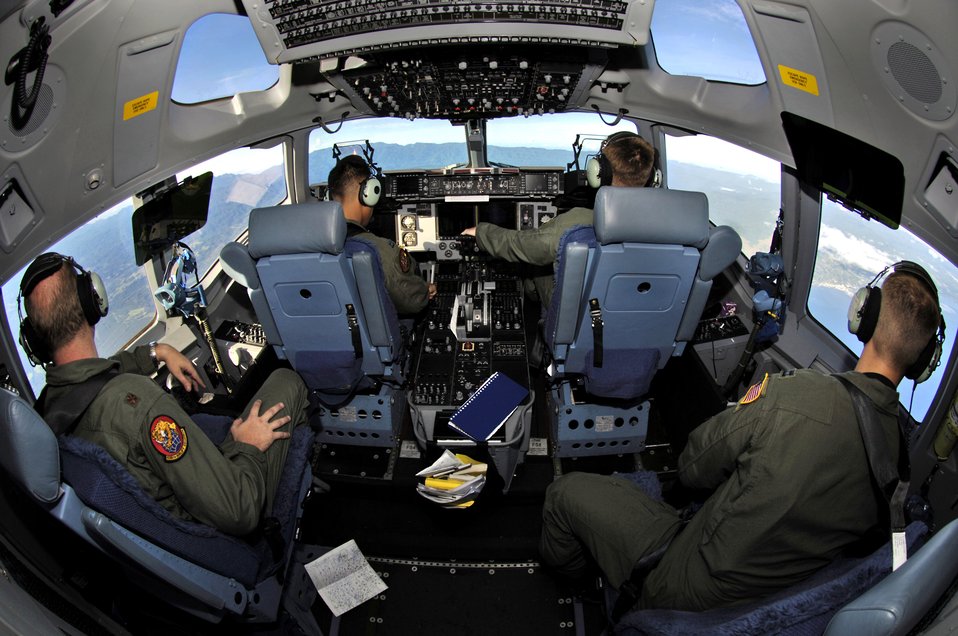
Loadmasters help reposition Australian Defense Forces

C-17 Globemaster III crew members view Guadalcanal during take-off from Honiara International Airport, Solomon Islands, on Sunday, May 28, 2006. Two C-17 Globemaster IIIs and their crews are helping the Australian Defense Force reposition its forces from the Solomon Islands back to Australia to better support peace operations in East Timor.